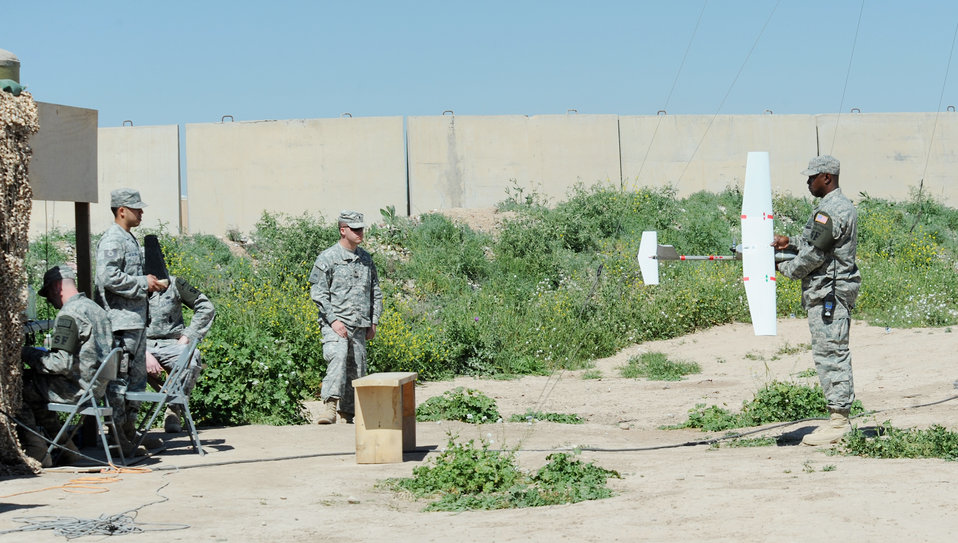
Airmen launch RQ-11B Raven

An operations check is done on a RQ-11B Raven unmanned aerial vehicle by members of the 506th Expeditionary Security Forces team, before its launch at Kirkuk Regional Air Base, Iraq, March 23, 2010. The Raven is remotely piloted by a mission operator and vehicle operator who work side by side to coordinate on what they are seeing and what direction the device is flying.